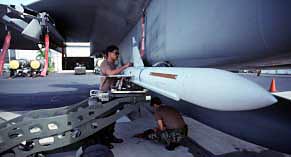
AIM-7 Sparrow

FILE PHOTO -- A weapons loader checks the AIM-7 Sparrow missile on an F-15 Eagle. The Sparrow is a radar-guided, air-to-air missile with a high-explosive warhead.